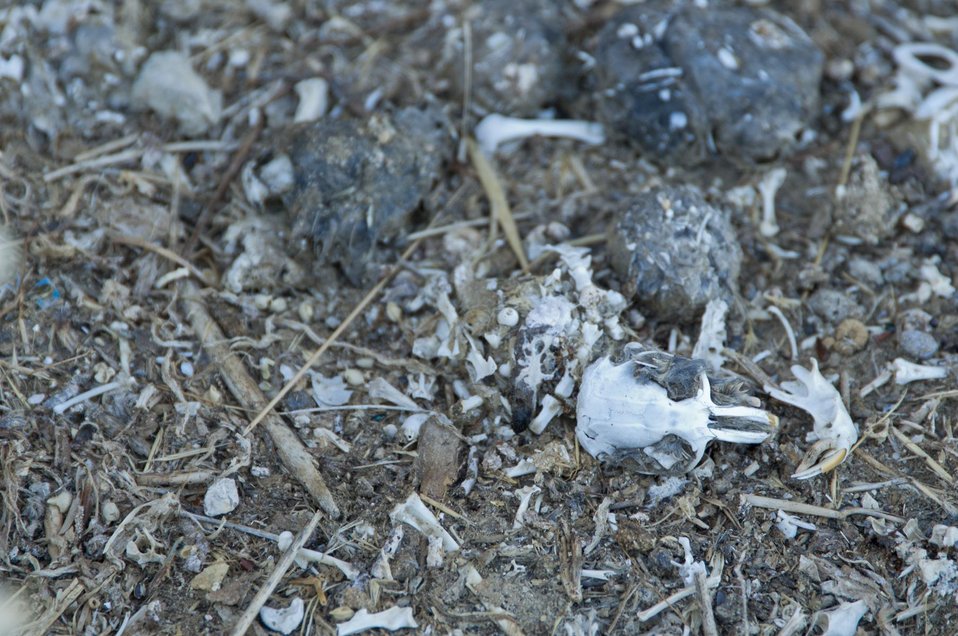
Boneyard of a Barn Owl, Carrizo Plain